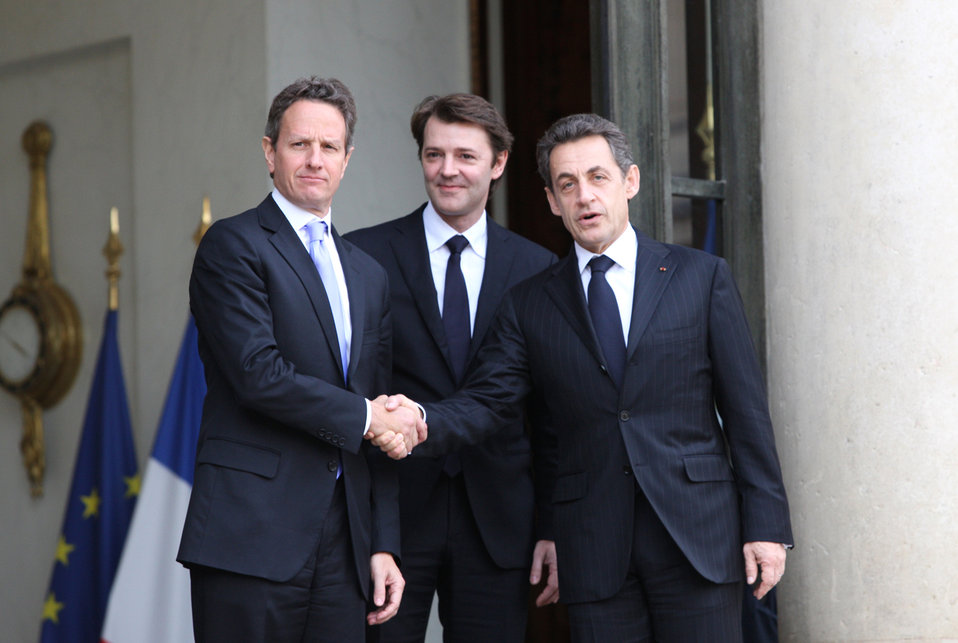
Secretary Geithner in Europe, Dec. 6-8, 2011

Treasury Secretary Tim Geithner, French Finance Minister François Baroin, and French President Nicolas Sarkozy (L to R) following their meeting at the Elysee Palace in Paris on December 7, 2011. Secretary Geithner met with European leaders on December 6-8, 2011 to discuss efforts to reinforce the institutions of the euro area.